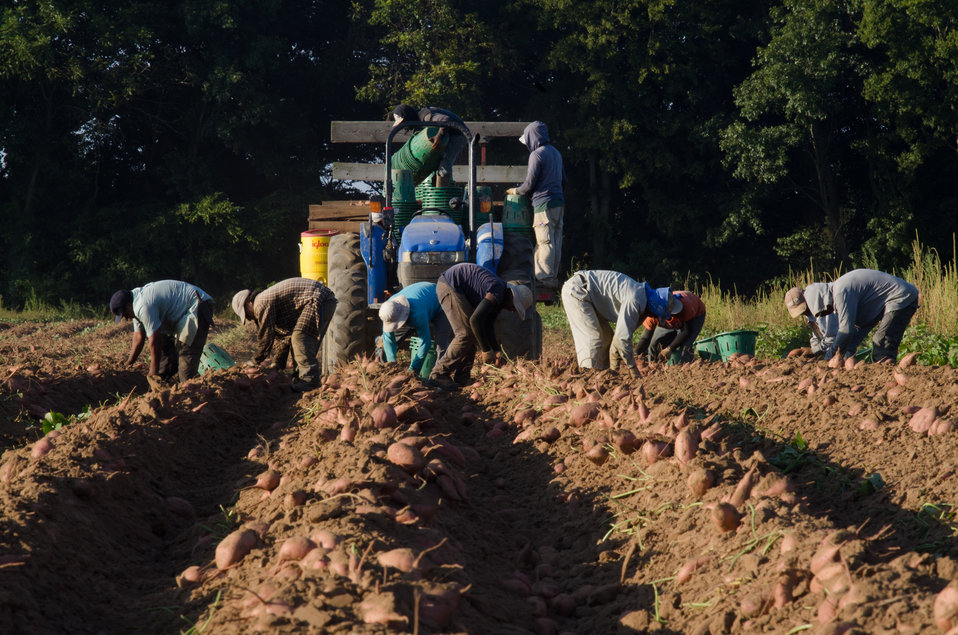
Large sweet potatoes grown underground, are first plowed up, then migrant workers have to delicately lift them to the top of the soil mound so they can trim off the greens, then sort according to size at Kirby Farms in Mechanicsville, VA on Friday, Sep. 20, 2013. Kirby Farms is a third-generation family farm that covers 500 acres, and generates produce and grains on a year-around operation. Please see the photoset description for more information about this farm operation and harvest. For information about the USDA, please go to www.usda.gov USDA photo by Lance Cheung.